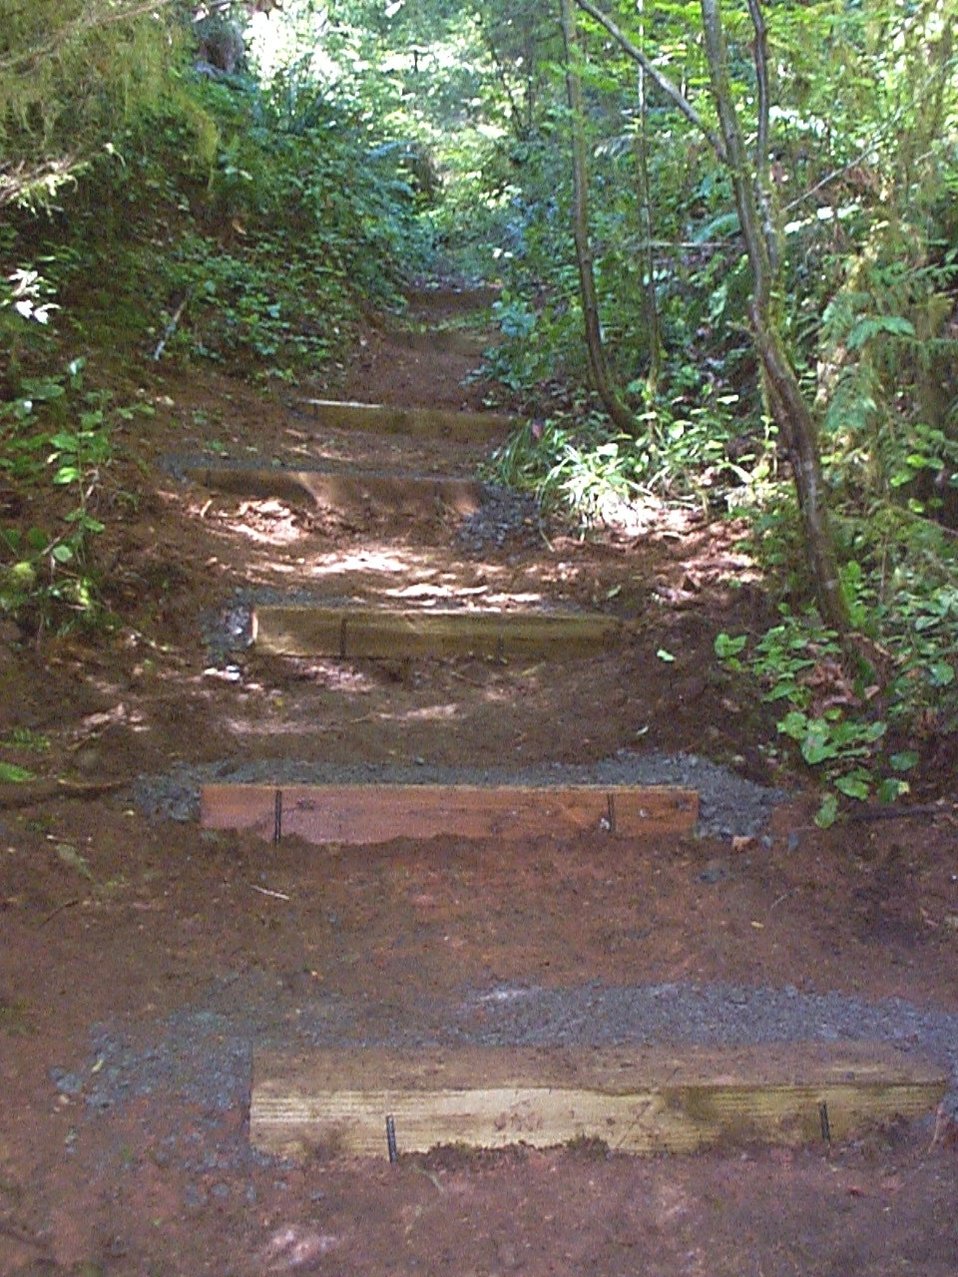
Volunteers construct steps on the trail at McGowen Creek.